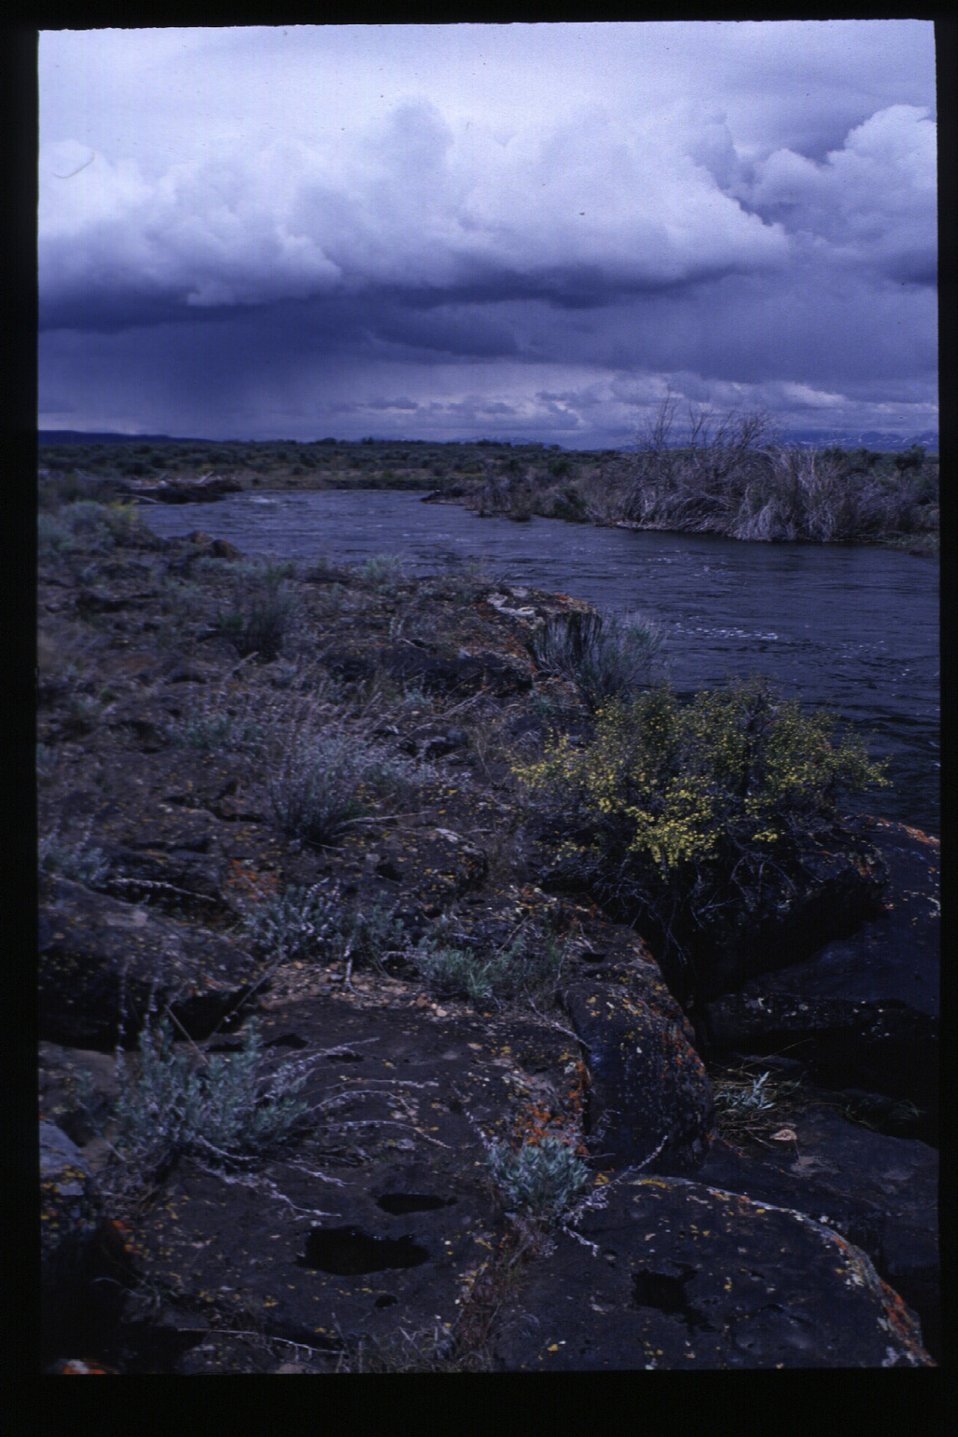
Big Wood River Scenic USRD Upper Snake River District